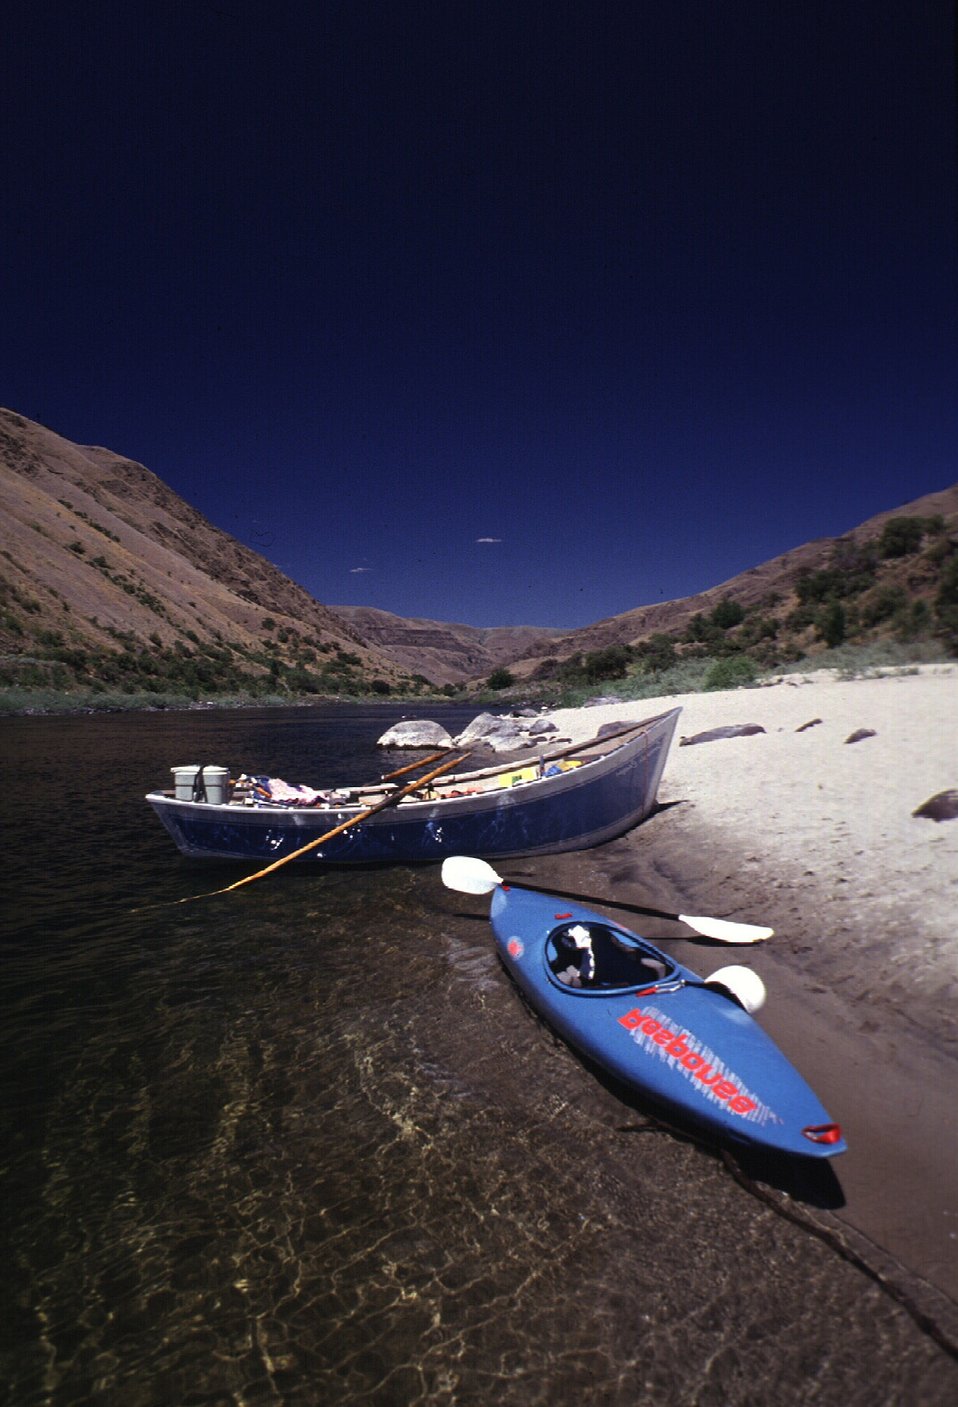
Kayak and dory Lower Salmon River Cottonwood Field Office UCSC Upper Columbia Salmon Clearwater District